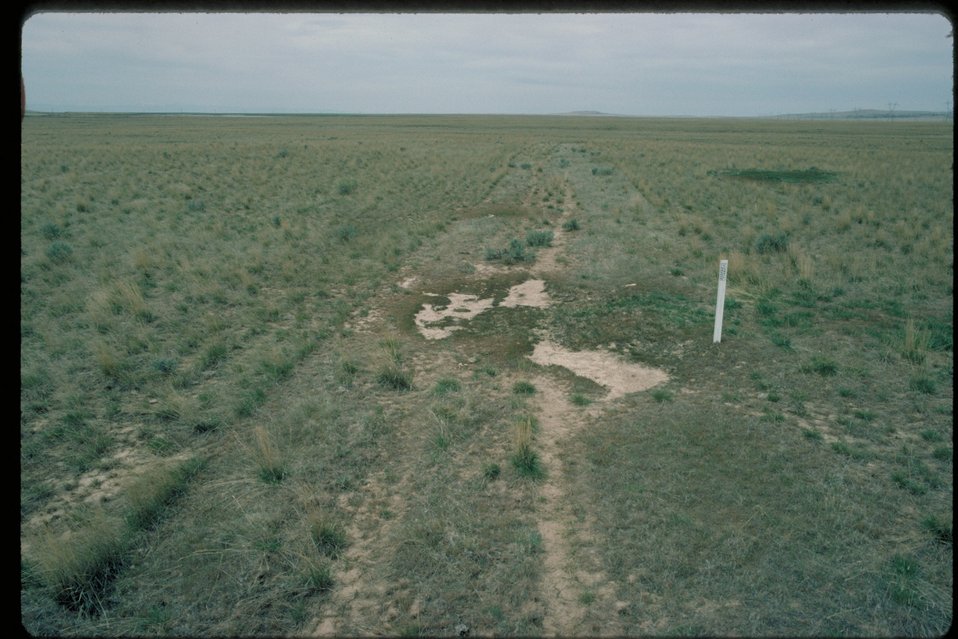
Oregon Trail near Hot Creek Lower Snake River District